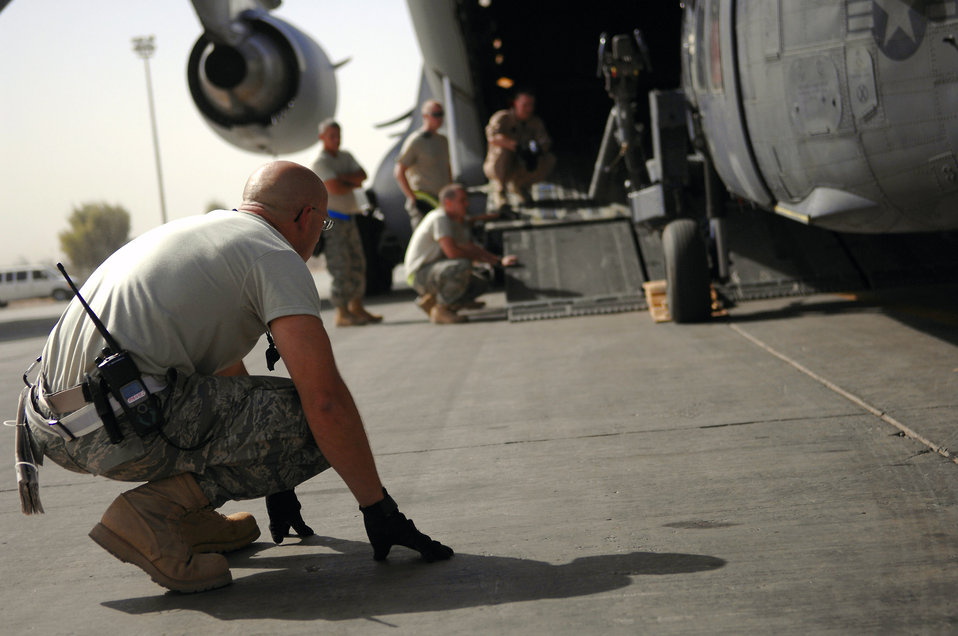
How to put a square peg in a round hole

Tech. Sgt. Jason Lauer watches the underbelly on an HH-60 Pave Hawk while it's loaded onto a C-17 Globemaster III July 12 at Joint Base Balad, Iraq. A winch system on the C-17 is hooked to the helicopter and slowly drags it into the ramp. Sergeant Lauer is a 64th Expeditionary Helicopter Maintenance Unit crew chief deployed from Davis-Monthan Air Force Base, Ariz.